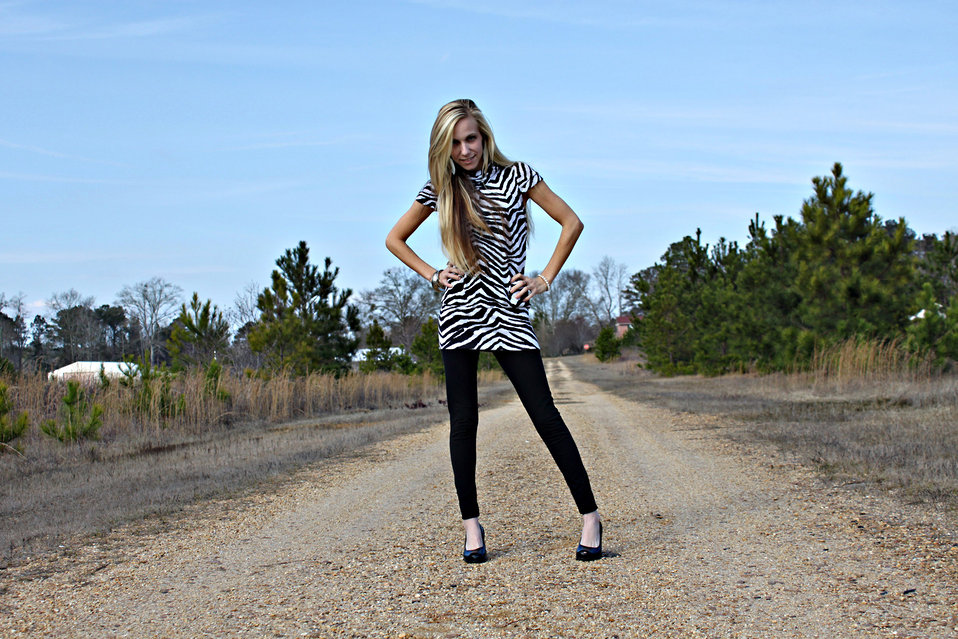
Emily

Girl posing in road.